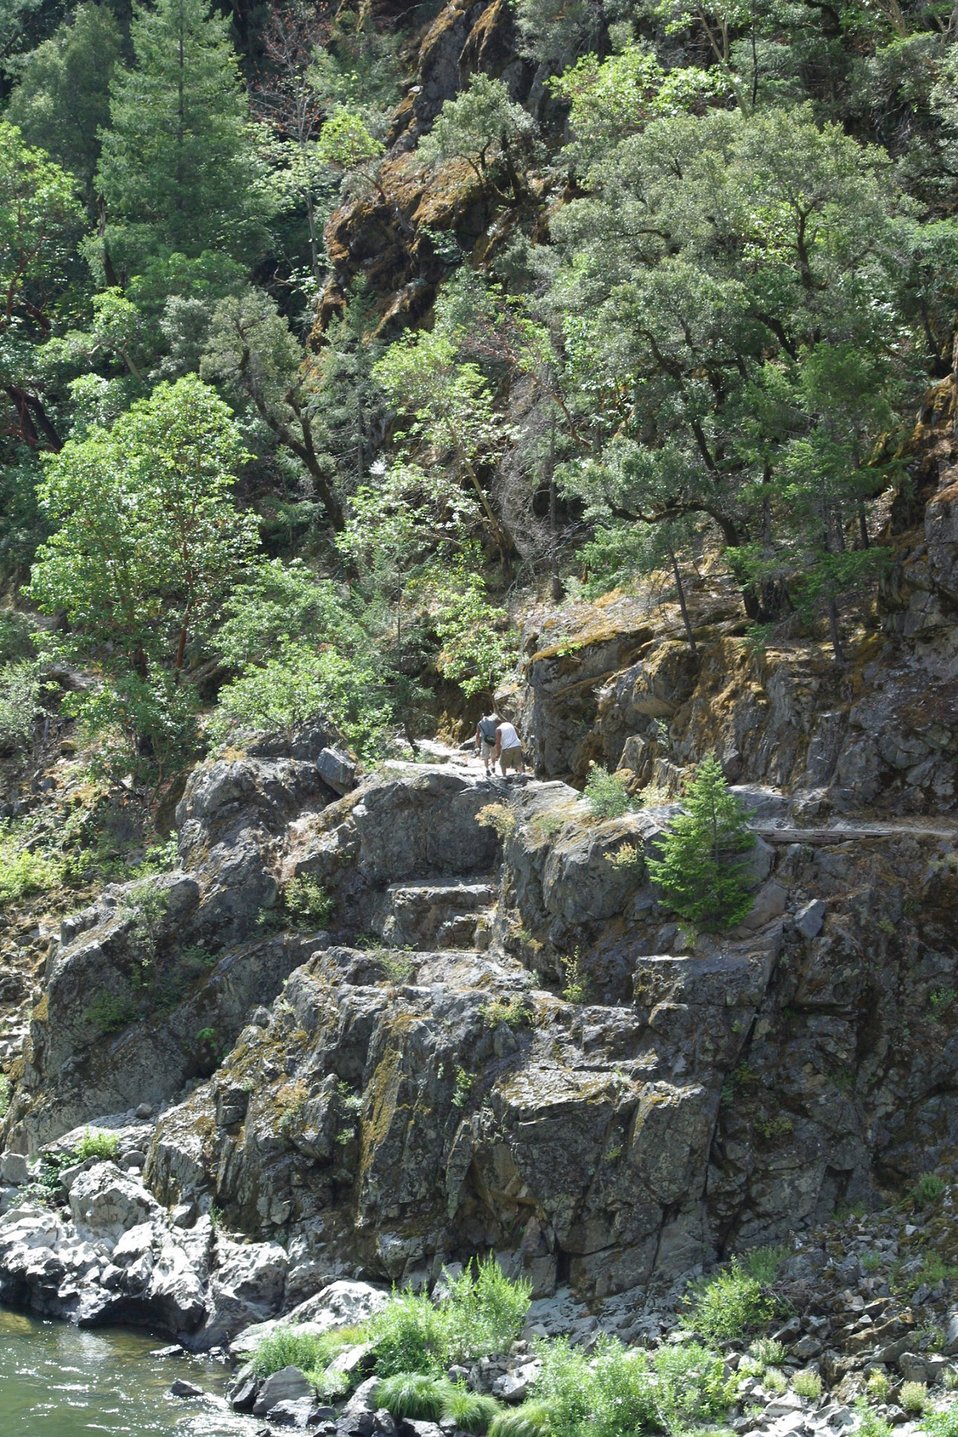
Hiking Rainie Trail between Grave Creek and Rainie Falls.